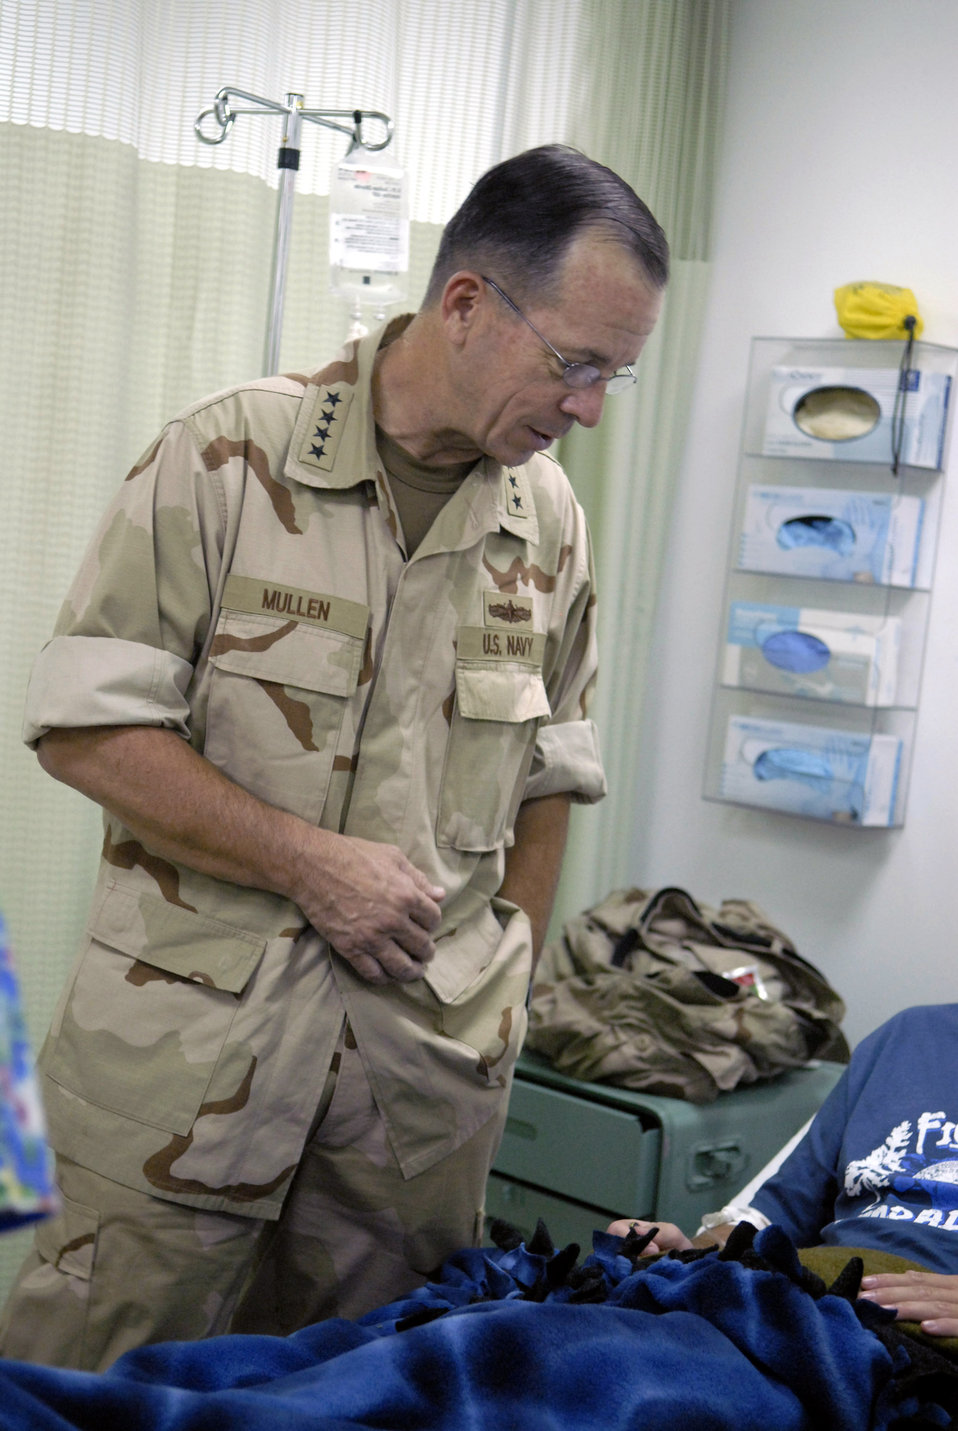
Chairman of the Joint Chiefs visits Air Force Theater Hospital

Navy Adm. Michael G. Mullen meets with American servicemembers during a visit to Balad Air Base's Air Force Theater Hospital Oct. 4. Admiral Mullen is the newly appointed Chairman of the Joint Chiefs of Staff.